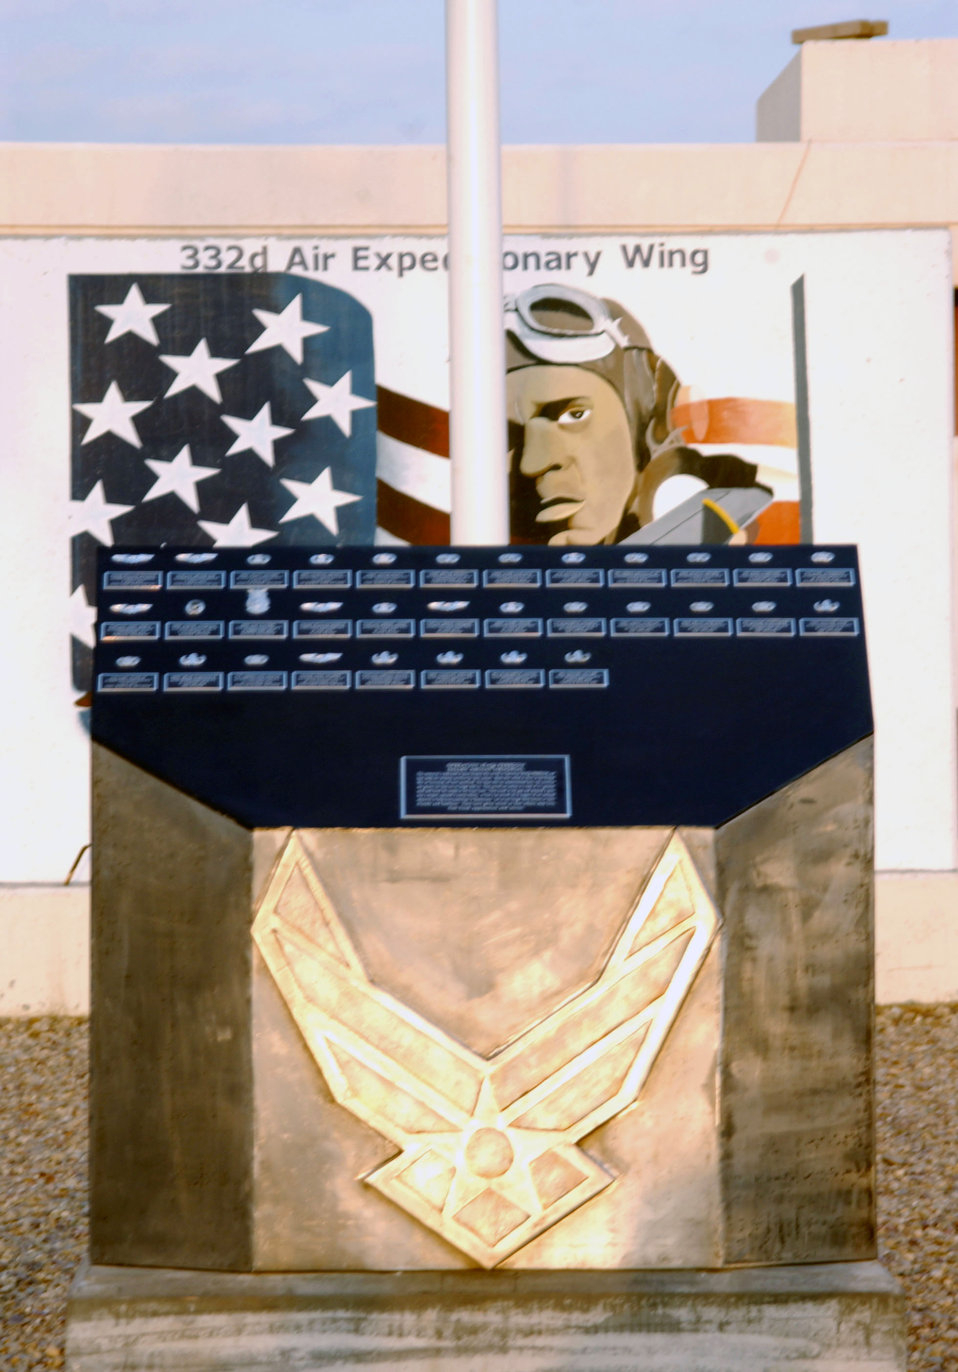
Fallen Airmen memorialized at Balad

The 332nd Air Expeditionary Wing's new momument to honor fallen Airmen sits on display in front of the wing's headquarters building Jan. 11 at Balad Air Base, Iraq.